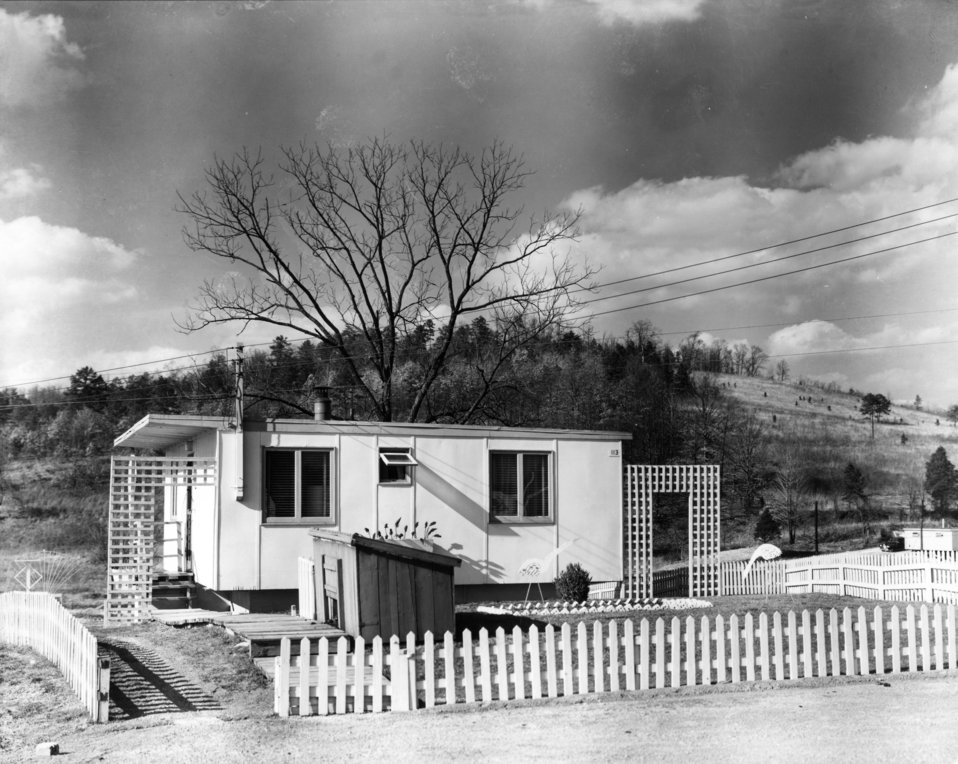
Housing at Oak Ridge